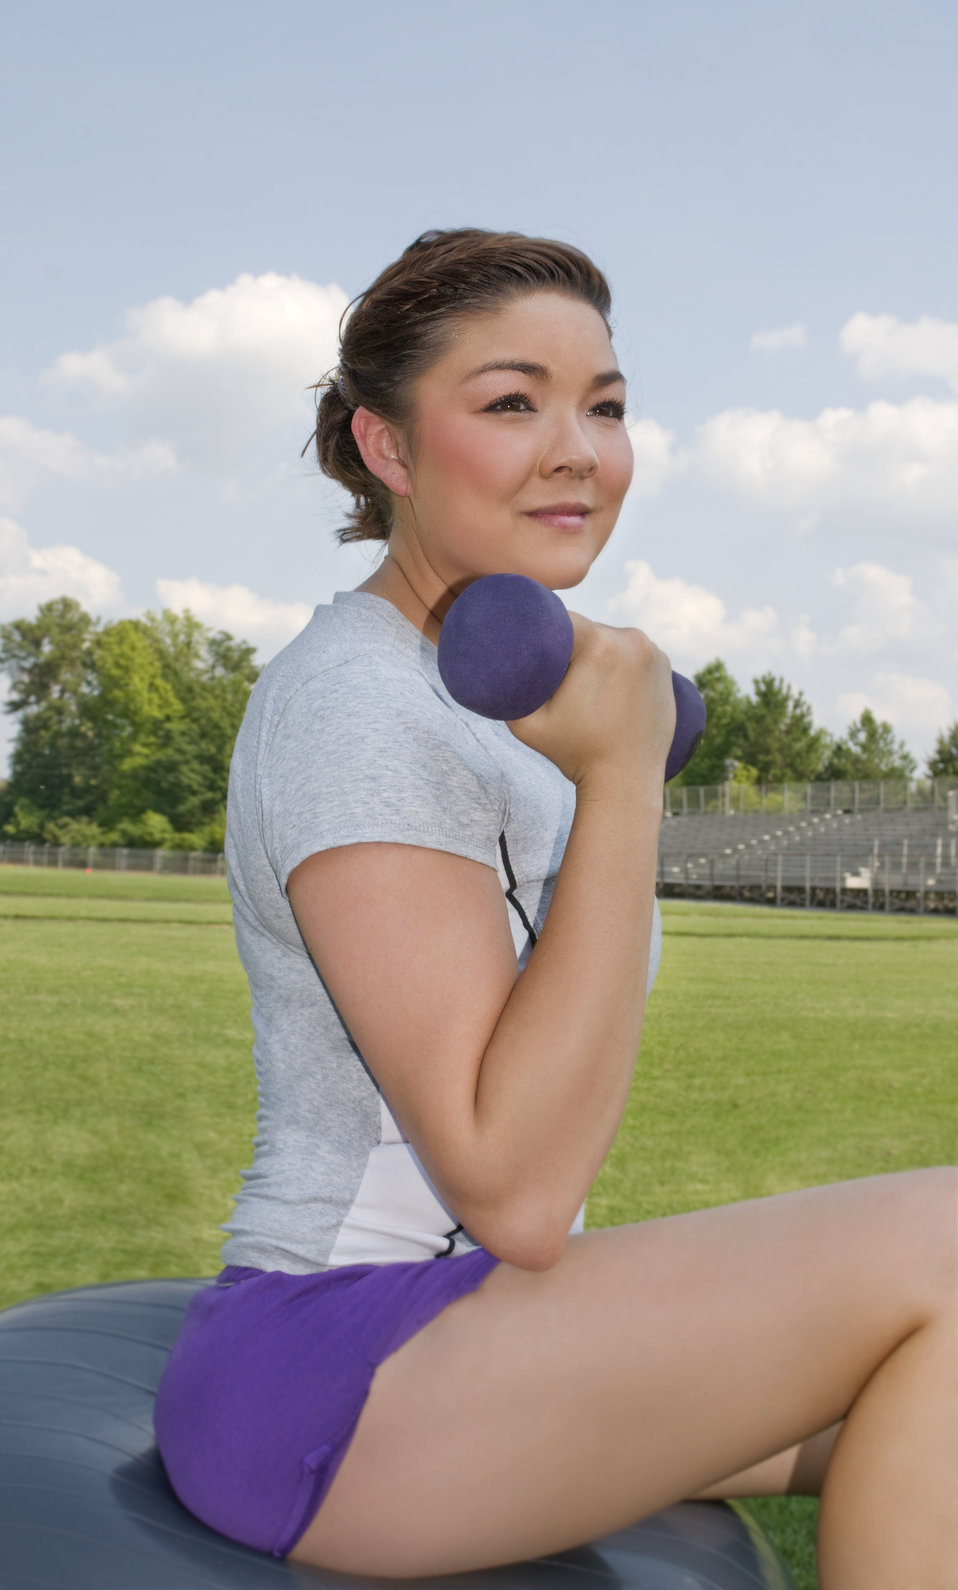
A young woman with weights

Photographed at a Georgia track field, this young woman was in the process of warming up prior to participating in some 'vigorous-intensity aerobic activity' on this sunny day. She was shown here from a right side perspective, as she was seated on a large inflatable balance ball, and was curling a 5lb dumbbell with her right arm.